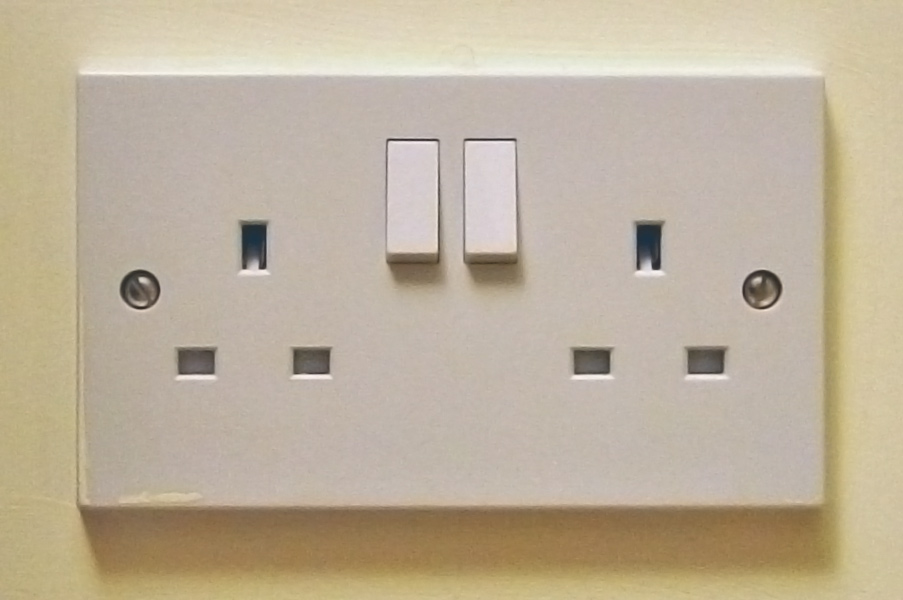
This image is a digital photograph taken by myself on 17/06/06. It is not available anywhere else.